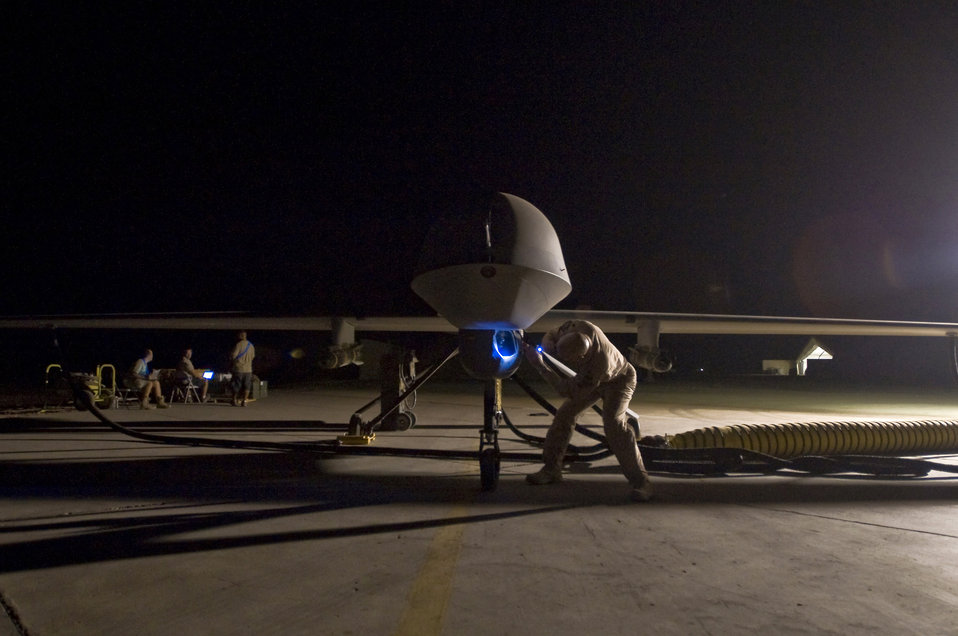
Check and re-check

Lt. Col. Geoffrey Barnes performs a pre-flight inspection of an MQ-1B Predator Sept. 3 at Ali Base, Iraq. The Predator is a medium-altitude unmanned aircraft system. Colonel Barnes is the commander of Detachment 1, 46th Expeditionary Reconnaissance Attack Squadron.